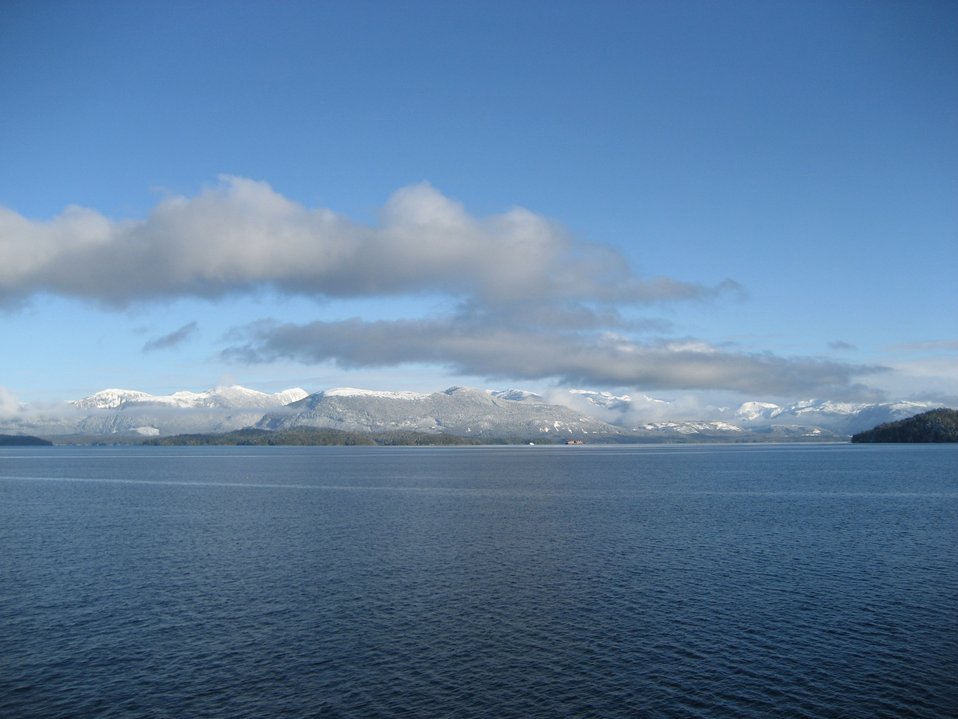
Mountains, snow, and tug and tow along the Inside Passage.